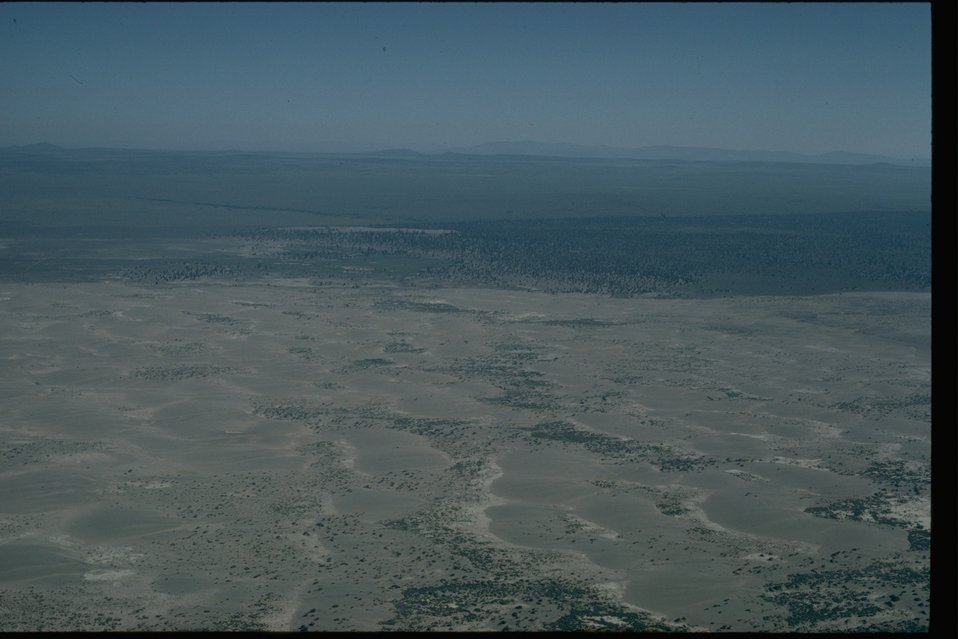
Arial shot of the Sand Dunes Wilderness Study Area. OR 1-24